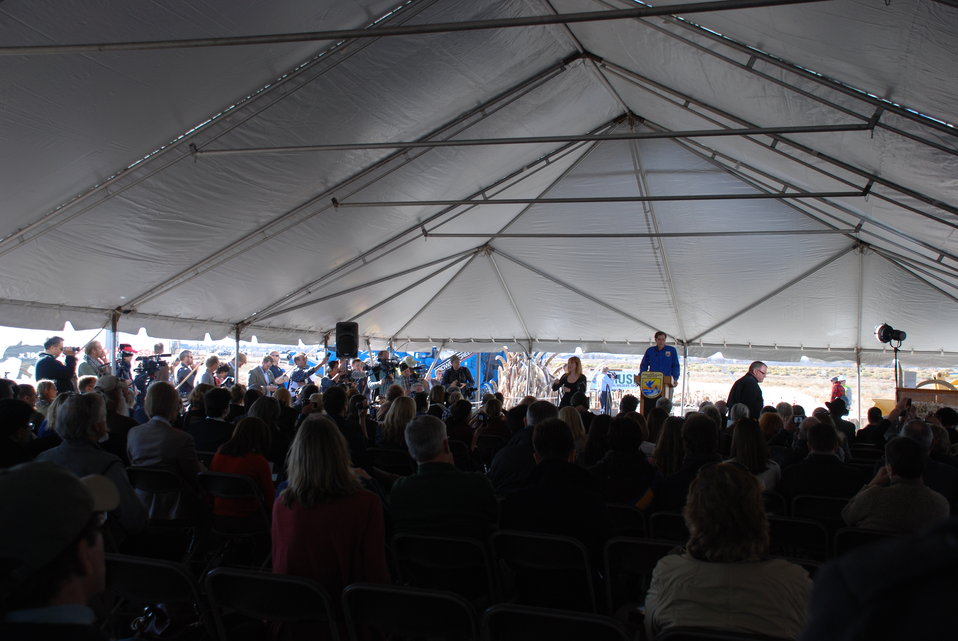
Ivory Crush 2013